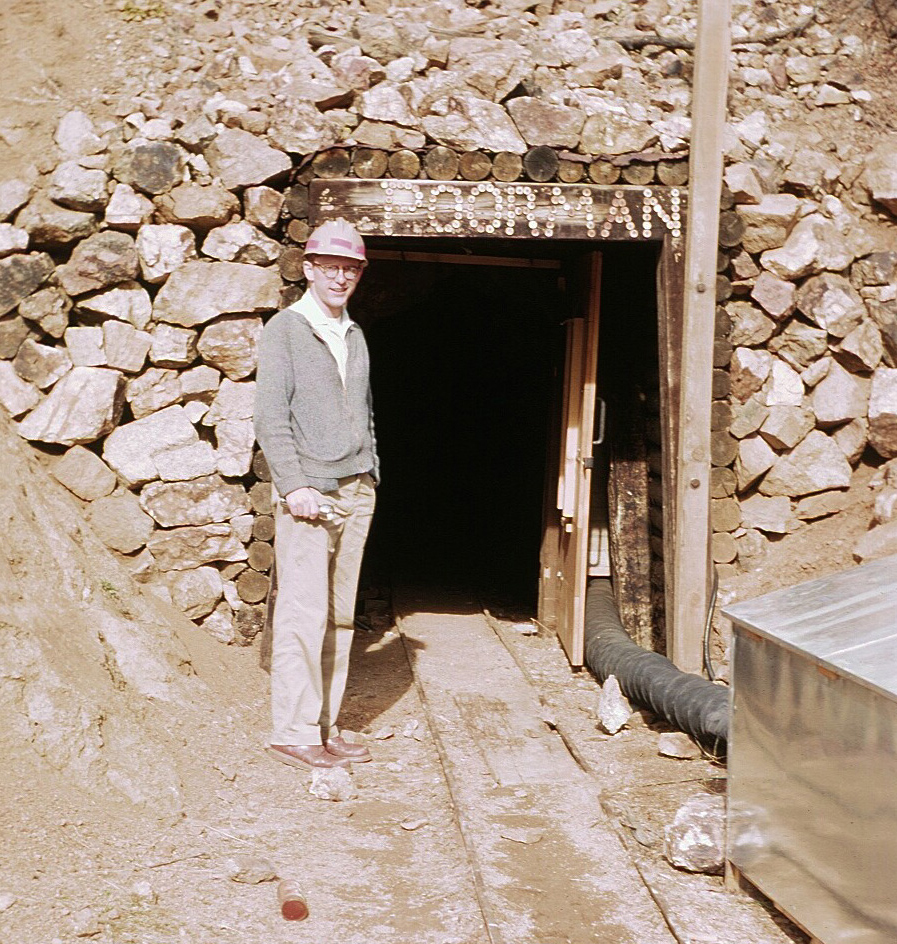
Poorman's Relief Gold Mine

Jan Hall at Poorman's Relief Gold Mine